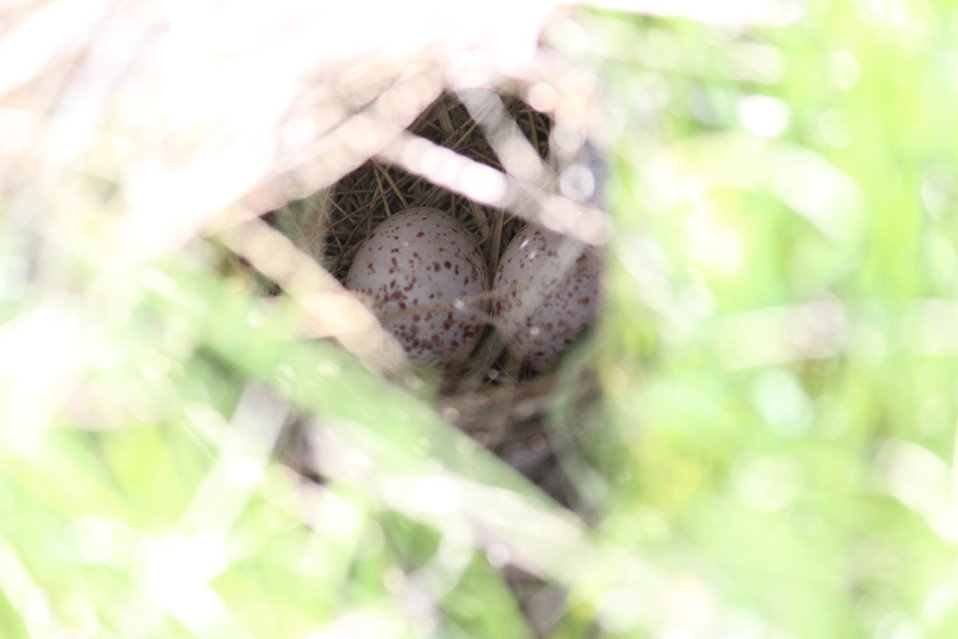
Western Meadowlark Nest

Here's a peak into a Western Meadowlark's nest that was found on the Cornell WPA in LaMoure County, ND.